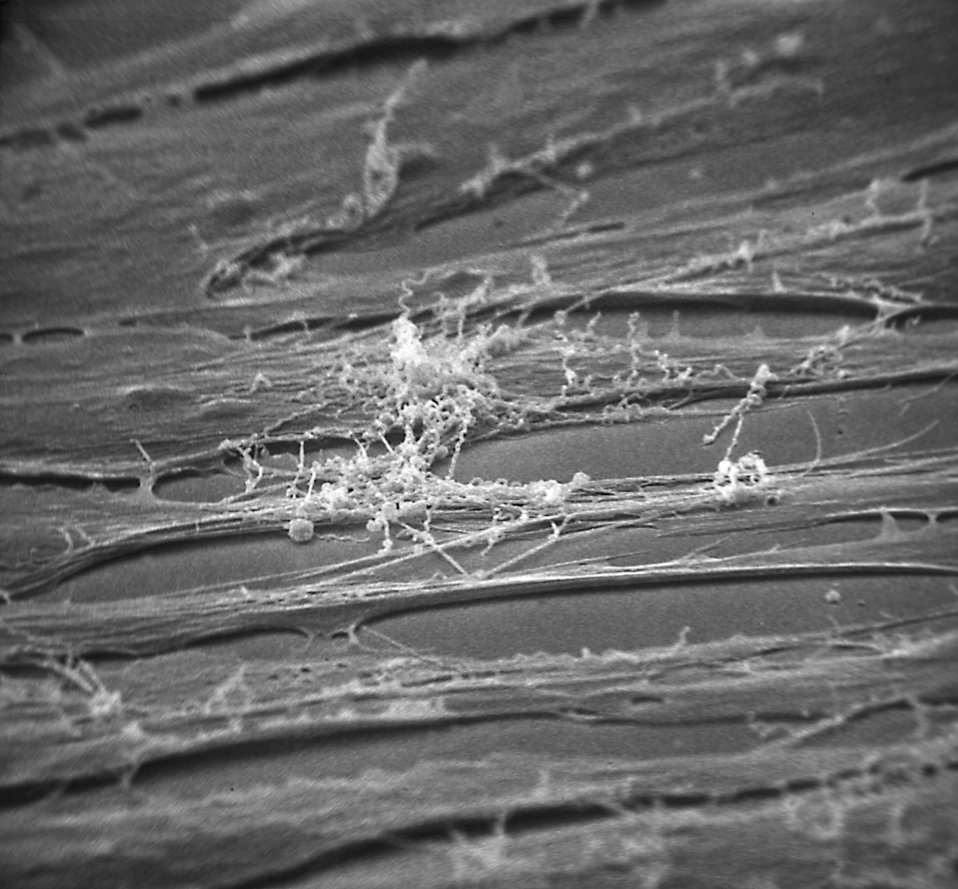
Electron micrograph of Treponema pallidum on cultures of cotton-tail rabbit epithelium cells (Sf1Ep).